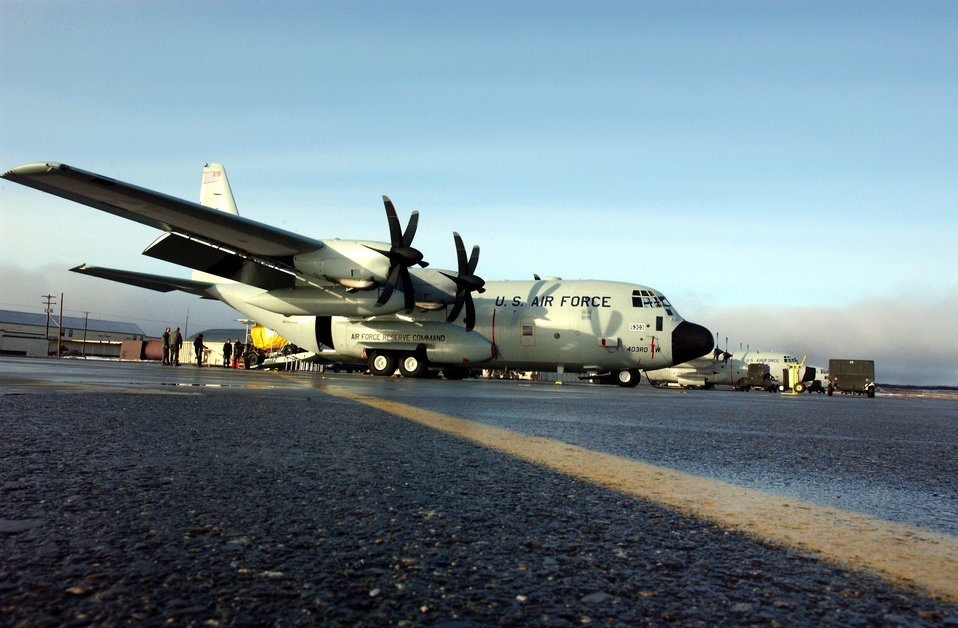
Hurricane Hunters track Pacific winter storms

A WC-130J on the apron at Elmendorf Air Force Base, Alaska, in 2003. The J-model allows aircrews to fly higher improving the winter storm forecast models.